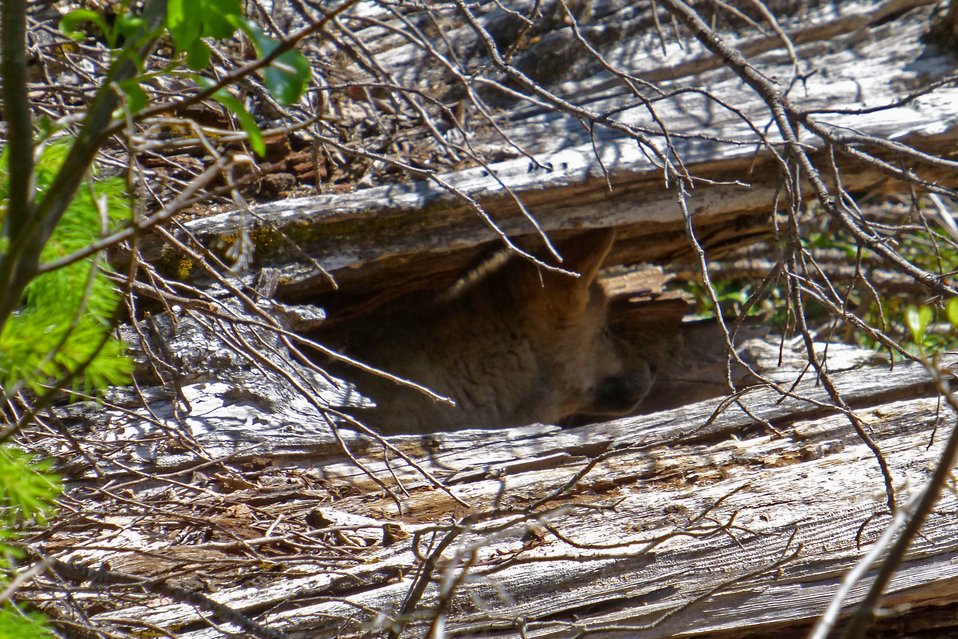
OR7 wolf pups

Wolf OR7 and a mate have produced offspring in southwest Oregon’s Cascade Mountains, wildlife biologists confirmed the week of June 2, 2014. In early May, biologists suspected that OR7, originally from northeast Oregon, had a mate in the Rogue River-Siskiyou National Forest when remote cameras captured several images of what appeared to be a black female wolf in the same area. U.S. Fish and Wildlife Service (Service) and Oregon Department of Fish and Wildlife (ODFW) biologists returned to the area Monday and observed two pups. It would be the first known wolves to breed in the Oregon Cascades since the mid-1940s.